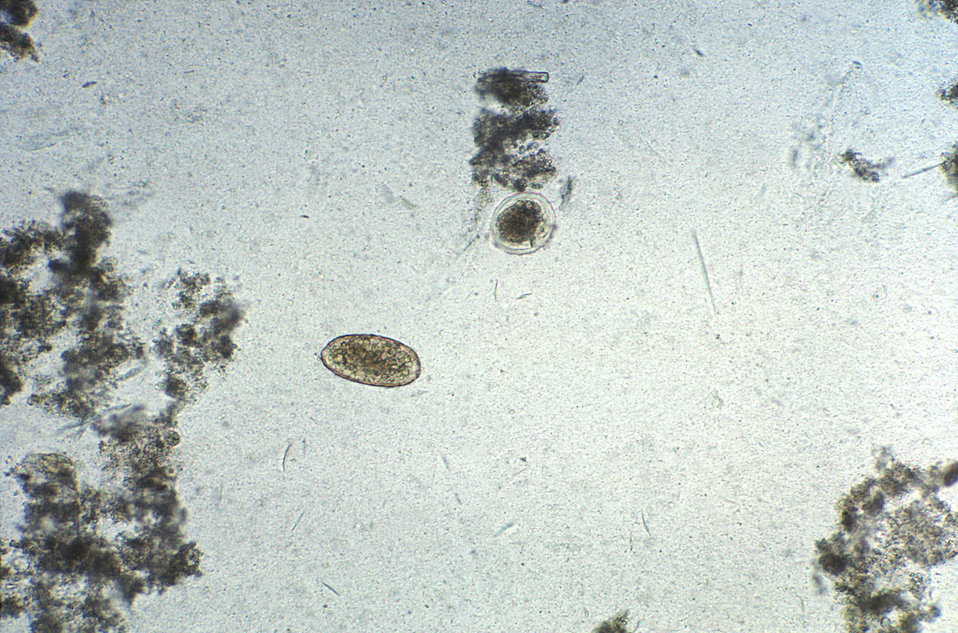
Magnified 128X, this photomicrograph revealed some of the ultrastructural features displayed by an infertile, decorticated Ascaris lumbricoides egg.